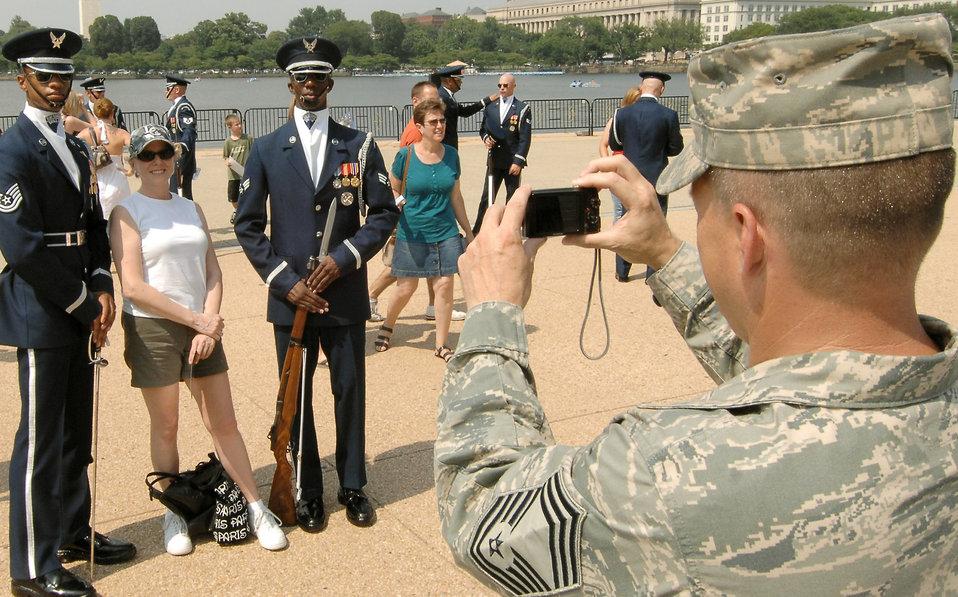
Monumental performance

Chief Master Sgt. Harold Hutchison takes a snapshot of a spectator and two members of U.S. Honor Guard Drill Team after their performance July 8 at the Jefferson Memorial in Washington D.C. as part of the team's Summer Drill Series. The team will perform around the National Capitol Region until July 29. Chief Hutchison is with the 11th Operations Group at Bolling Air Force Base, D.C.